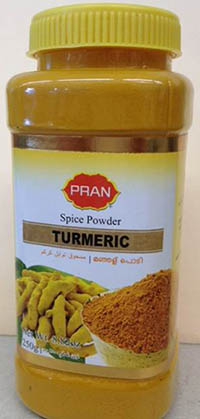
RECALLED – Powder turmeric

October 8, 2013 – Product Recall – Asia Cash & Carry Inc. Recalls PRAN Brand Spice Powder Turmeric Due to Elevated Levels of Lead.